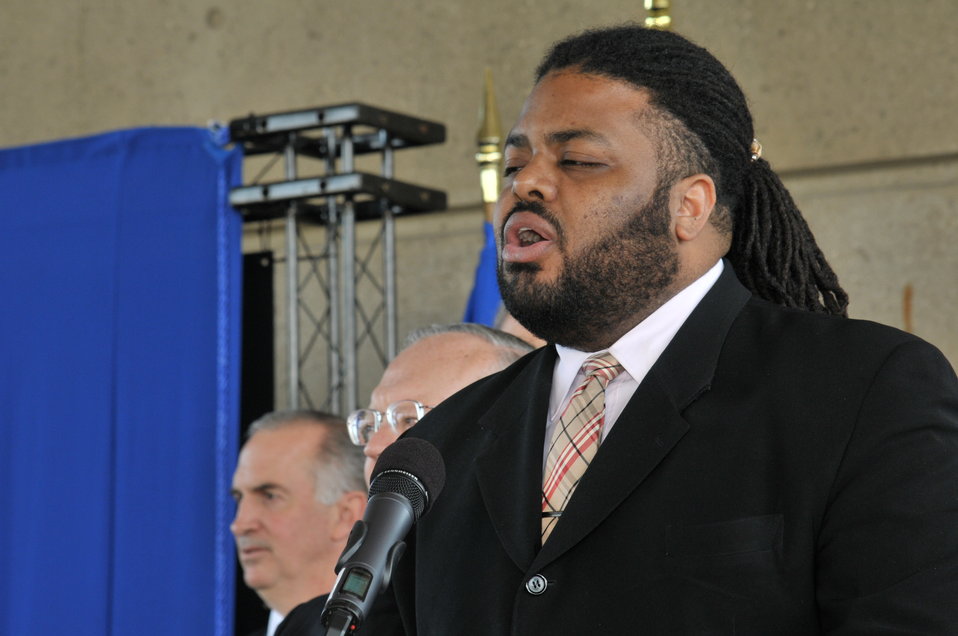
U.S Postal Services introduces a new Global: Sea Surface temperatures forever stamp at the Earth Day program at Department of Energy on April 22, 2014. ( DOE Deputy D.Poneman,T.Day, C.Williams, C.Anderson II, J.Colin Ph.D, Dr. K. Sullivan, K.Tobin Ph.D, W. Gicher Jr)